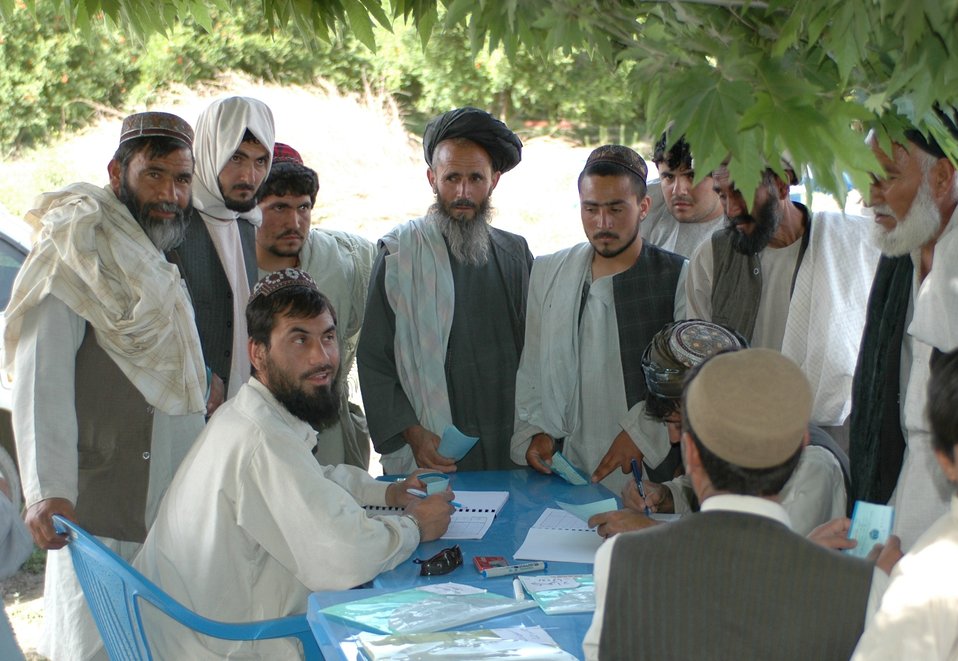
Dr Shah Visits Argandab April 10, 2010